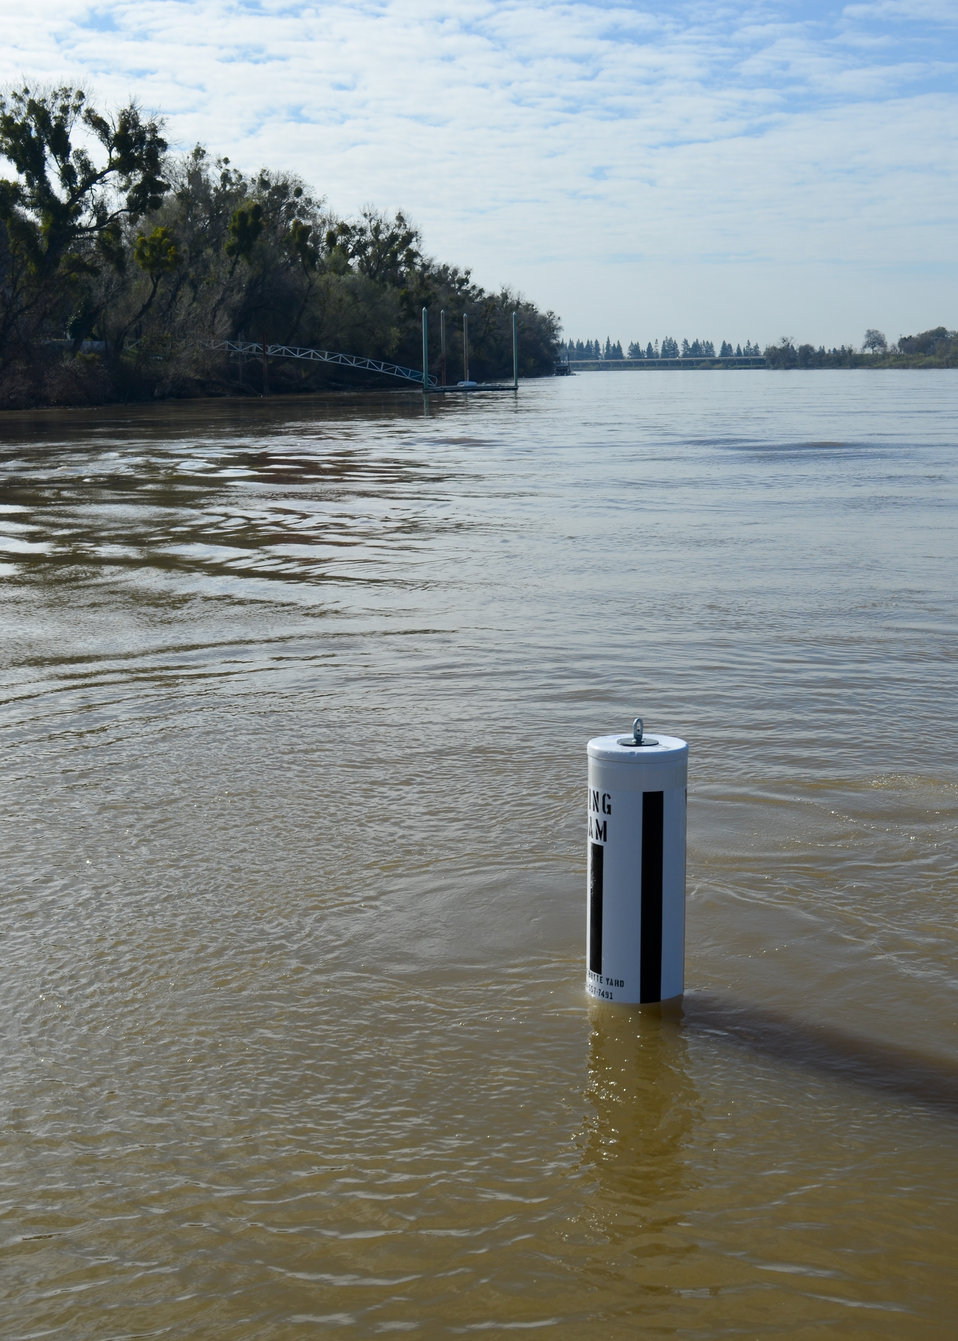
Maintaining buoys for safer river navigation

A newly deployed U.S. Army Corps of Engineers Sacramento District buoy warns boaters of a wing dam in the Sacramento River March 21, 2012 near Sacramento, Calif. Wing dams are underwater structures which slow river bank erosion while helping the river naturally dredge itself. The district maintains 54 wing dam buoys on the Sacramento River between its confluences with the Feather River to the north and the American River to the south.